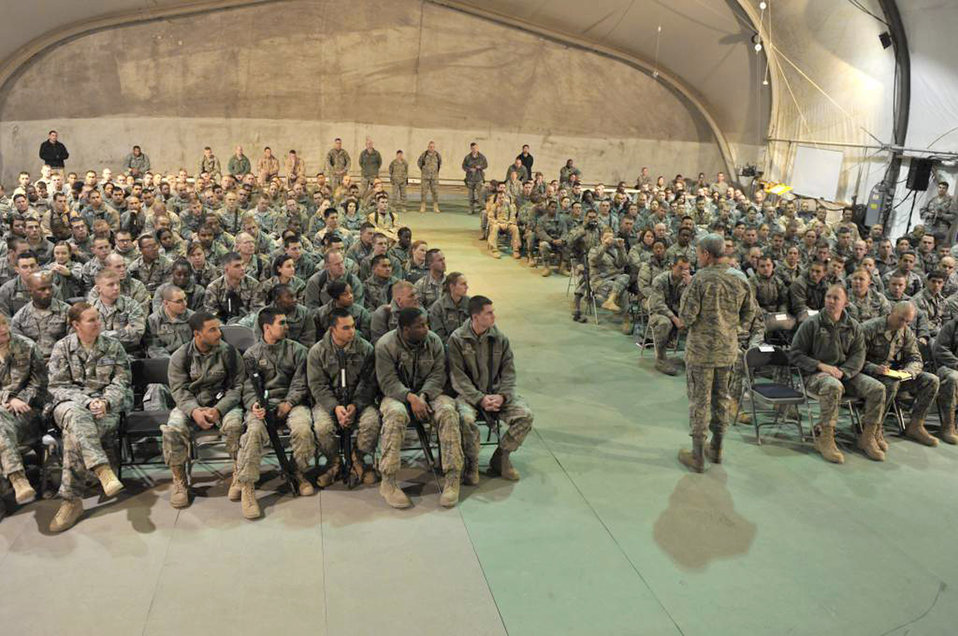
CSAF meets with Airmen

Air Force Chief of Staff Gen. Norton Schwartz speaks to Airmen during an